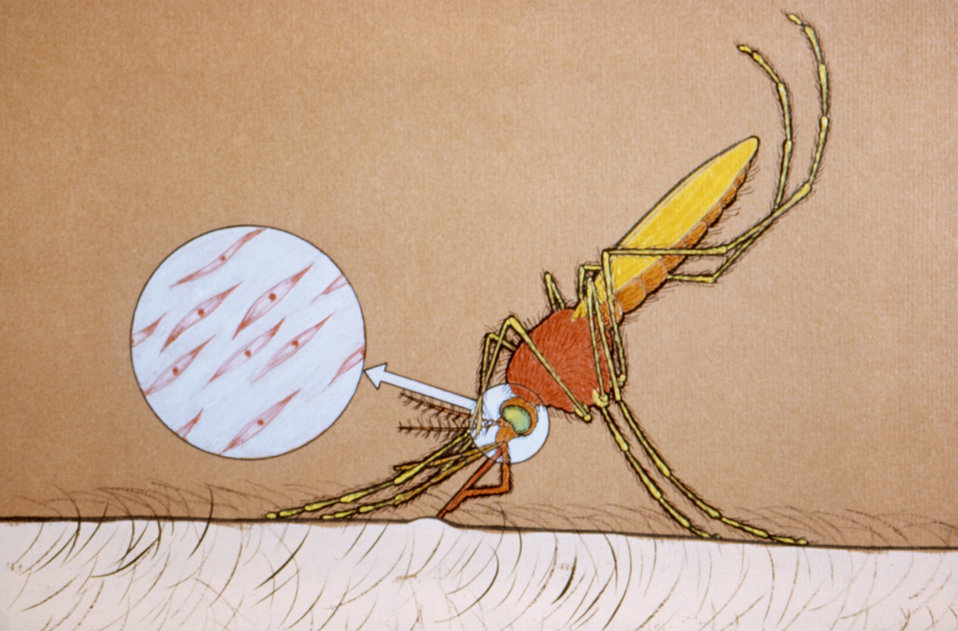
This illustration depicts an Anopheles sp. mosquito transmitting sporozoites while obtaining a blood meal.